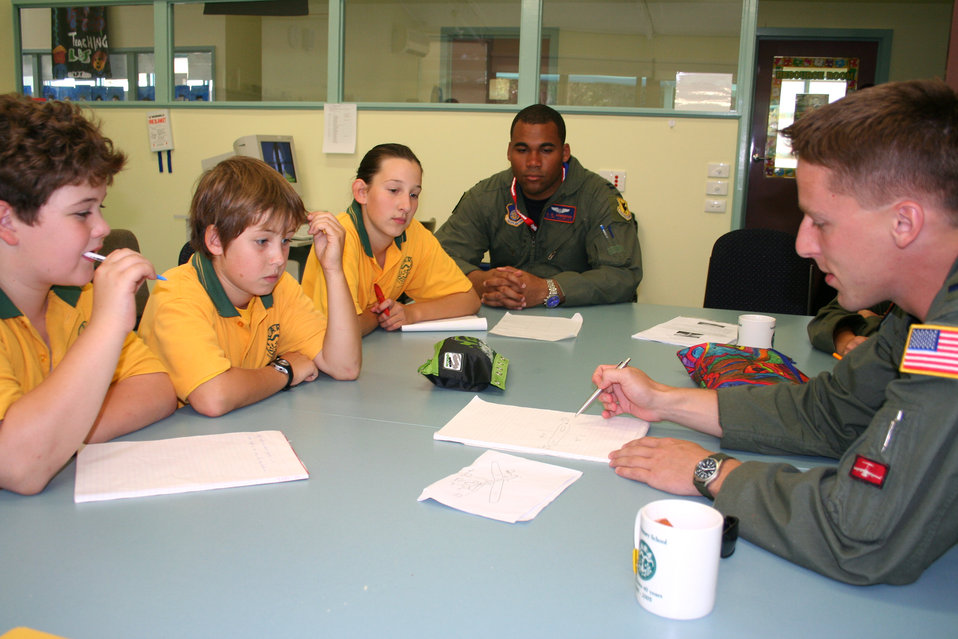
Airmen visit Australian primary school

First Lt. Ryan Freeman gives advice to Lara Primary School sixth-graders Liam Carter, Brandon Steele and Andrea Lackovic on how to build a model airplane for their school project as Capt. C.D. Henderson observes. The Airmen visited the school in Victoria, Australia, March 22 to speak to students about being in the Air Force. They are in Australia supporting Australian International Airshow 2007. Lieutenant Freeman a pilot with the 535th Airlift Squadron at Hickam Air Force Base, Hawaii, and Captain Henderson is an electronic warfare officer with the 961st Airborne Air Control Squadron at Kadena Air Base, Japan.